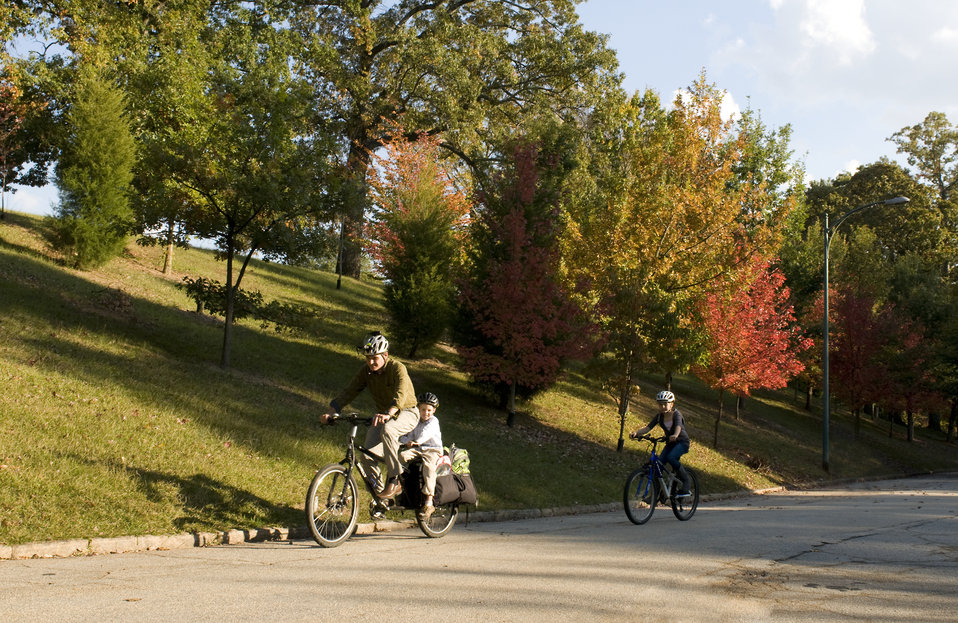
Protective measures having been taken by a careful father, this dad and his two young children were on their way, as they embarked on a Georgian bicycle trip. Riding behind her father, the daughter was riding her own bike, while the son, seated in a small child-safe bicycle seat, was riding on the same bike as his dad. All three were wearing aerodynamic safety helmets, and clothing to protect them from the sun, wind and insects. The only thing missing, was a piece of outerwear, which was very bright in color, allow for a greater degree of rider visibility.